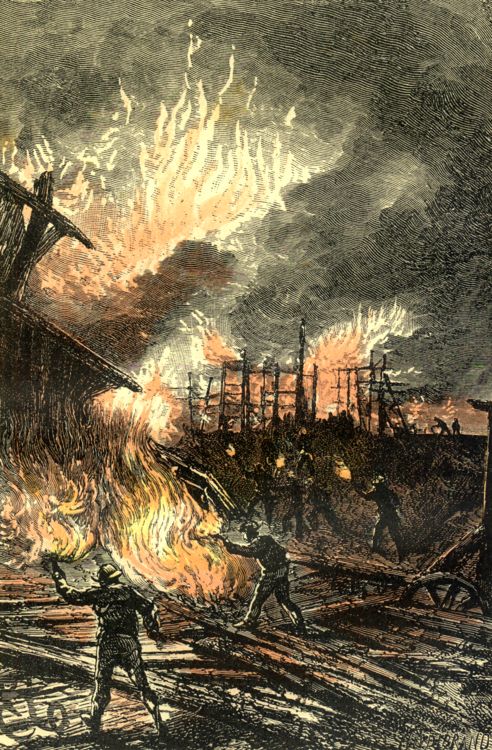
An illustration from Jules Verne's novel 'Twenty Thousand Leagues Under the Sea' (1866-69) drawn by George Roux. Polski: Ilustracja powieści Juliusza Verne'a 'Dwadzieścia tysięcy mil podmorskiej żeglugi' (tytuł przekładany także jako: 'Dwadzieścia tysięcy mil podmorskiej żeglugi około świata', '20.000 mil podmorskiej żeglugi'; 1866-69, I wyd. 1870) autorstwa Alphonse'a de Neuville lub Édouarda Riou. Français : Jules Verne 'Vingt mille lieues sous les mers' (1866-69), dessins par Alphonse de Neuville ou Édouard Riou. Orginal description taken from the book: Français : Le feu détruisit toute trace de notre passage.